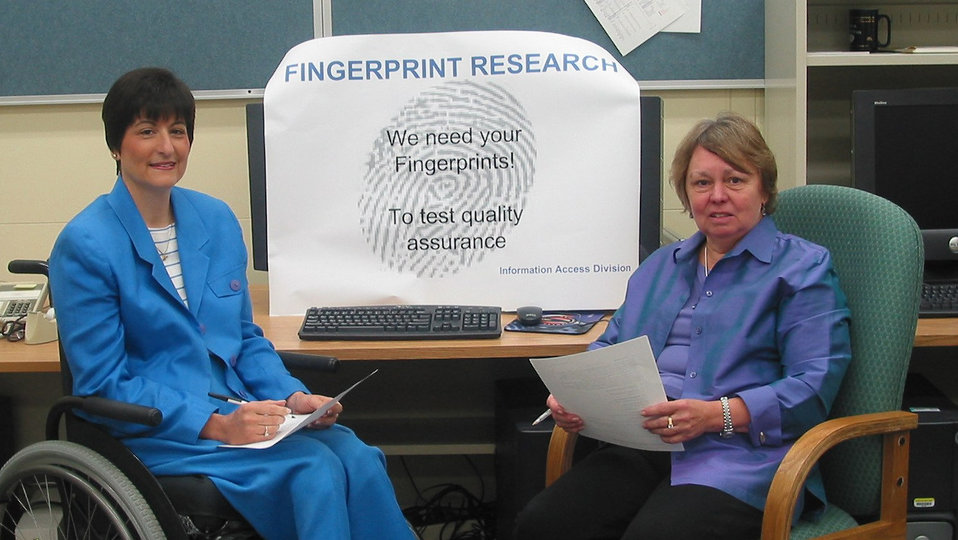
Usability Study of Biometrics Systems

Mary Theofanos (left) and Jean Scholtz of ITL collect data in the usability study of biometrics systems. (September 2005)